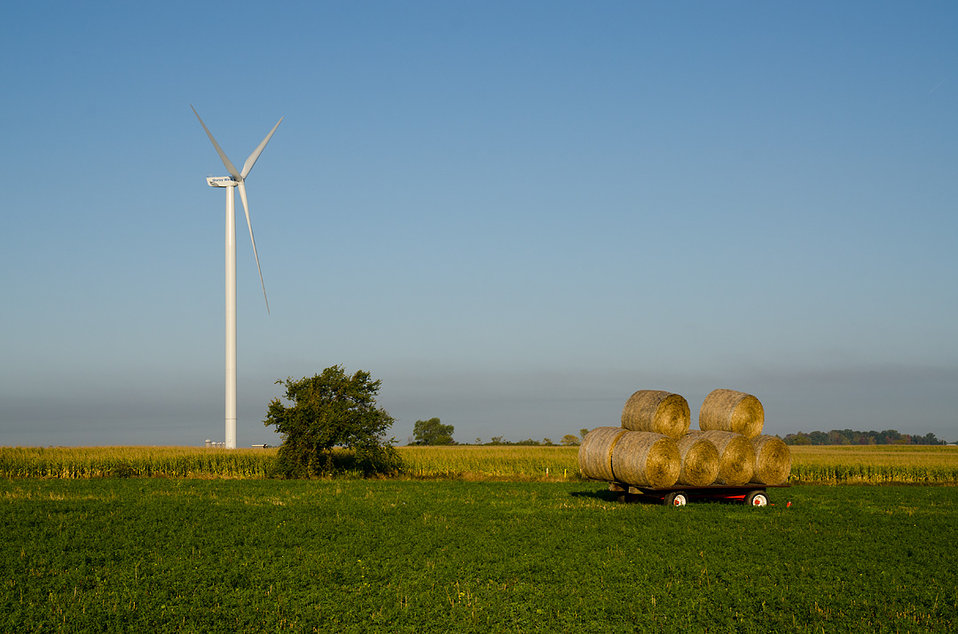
Shirley Wind Farm - Green Bay, Wisconsin.